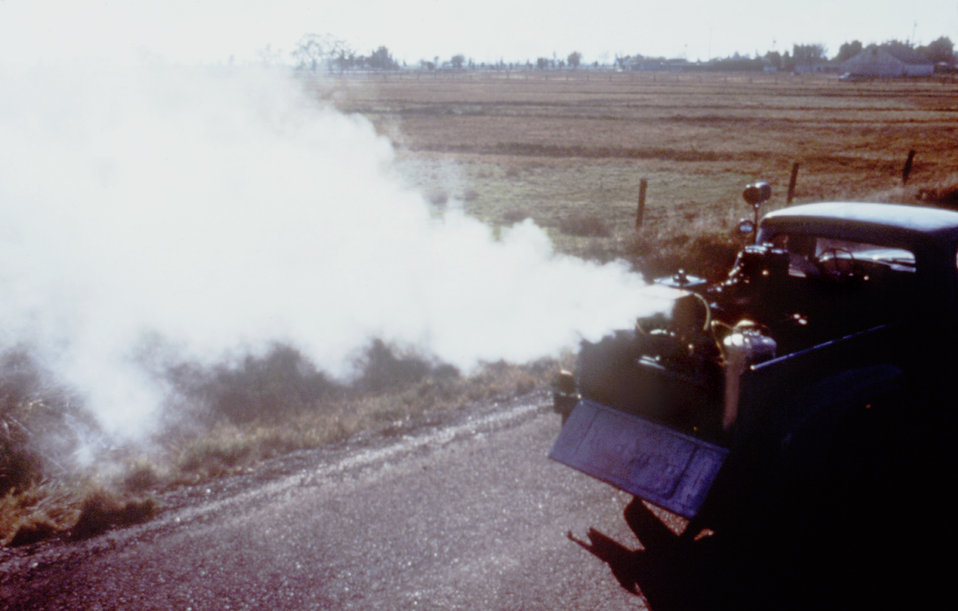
This truck-mounted fogger is attempting to minimize vector-borne diseases by applying insecticide to irrigation drainage pools.